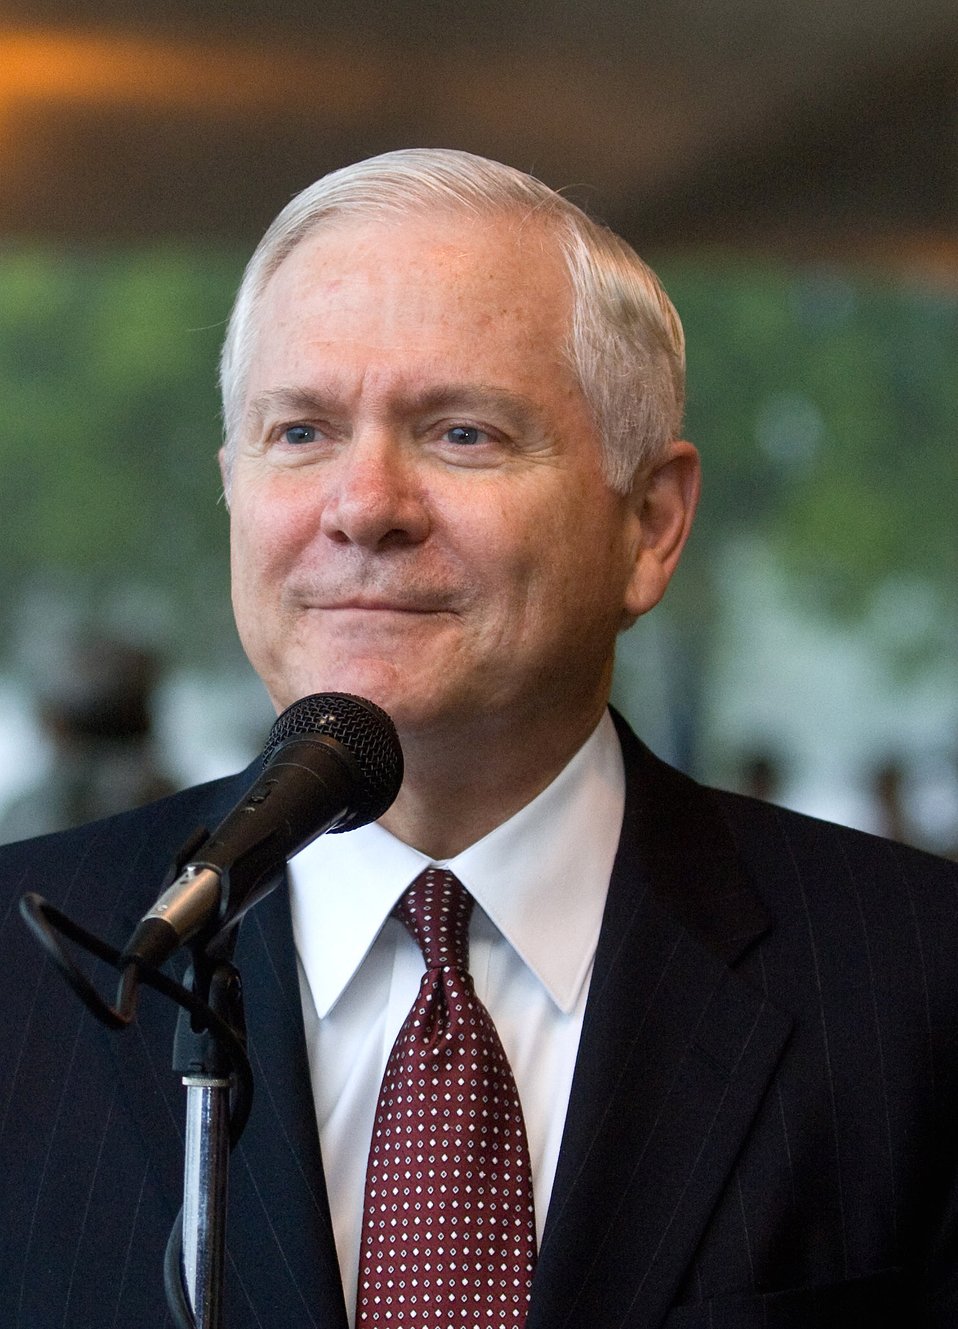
SECDEF visits Airmen, tour BMT facilities

Secretary of Defense Robert M. Gates speaks with members of the press after visiting Lackland Air Force Base, Texas, July 24.